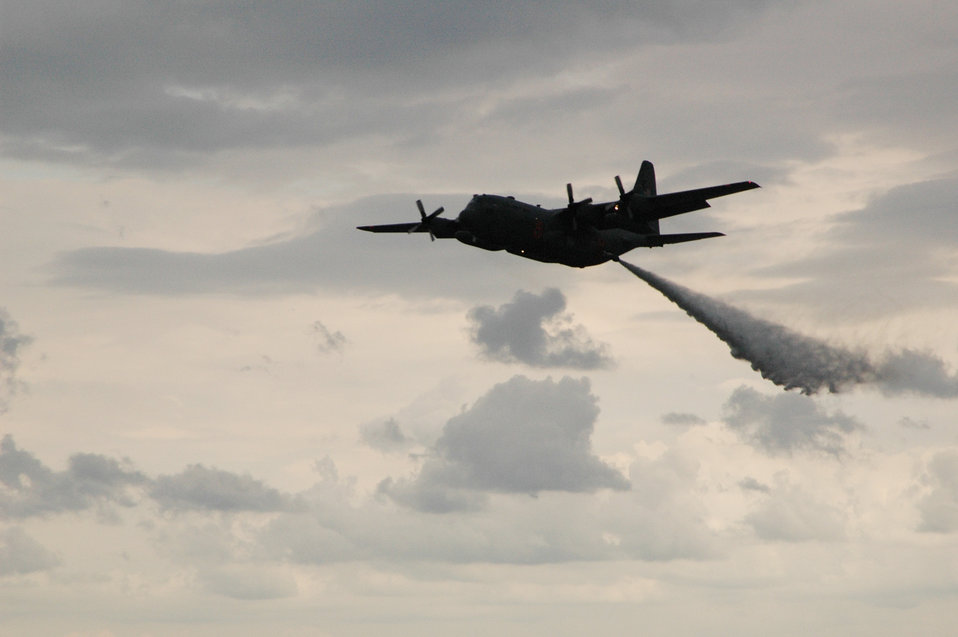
Look out below...

An Air Force Reserve Command C-130 Hercules equipped with a modular airborne fire fighting system gives an exhibition by dropping about 3,000 gallons of water at an airshow in Oshkosh, Wis. The Experimental Aircraft Association's AirVenture attracts hundreds of thousands of aviation enthusiasts from all over the world. The aircraft is assigned to the 302nd Airlift Wing at Peterson Air Force Base, Colo.